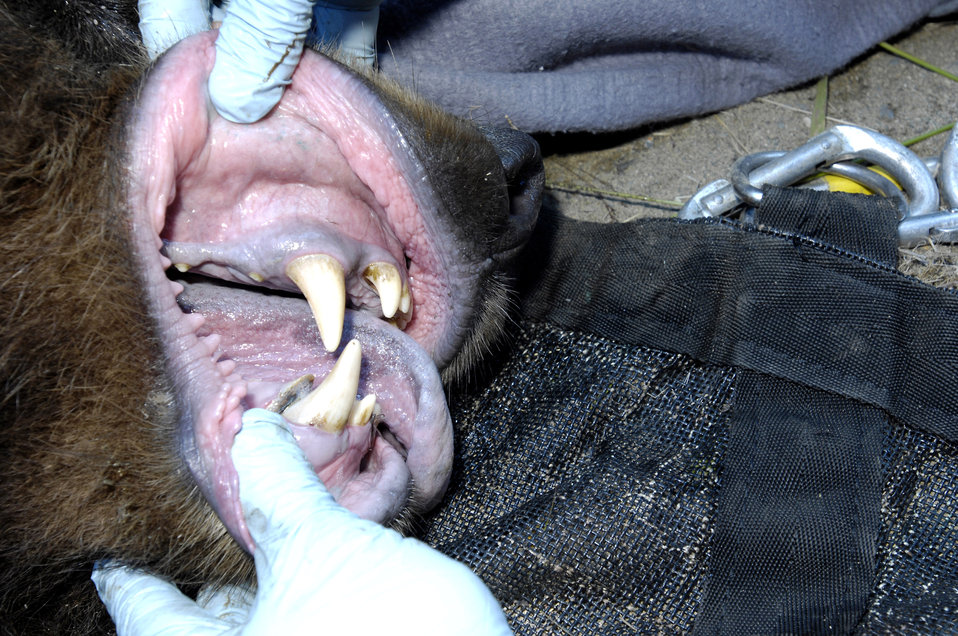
Unbearable time at Elmendorf

The lips of brown bear that was trapped and tranquilized are checked for tattoos from previous captures July 17 at Elmendorf Air Force Base, Alaska. Elmendorf AFB's military conservation agents and the Alaska Department of Fish and Game took DNA, blood and hair samples, measurements and fit the bear with a tracking collar that will allow the bear's movements to be monitored by global positioning satellites. The bear, a female around 6 years old and weighing more than 400 pounds, had been spotted near the base golf course and a barrel trap was set by base conservation agents. After trapping and collaring the bear, agents relocated the bear to a remote part of the base and monitored it from a distance until the bear woke and moved into the woods. The Department of Defense funded a study through the ADF&G to monitor the movement of brown bear on Elmendorf AFB and nearby Fort Richardson.